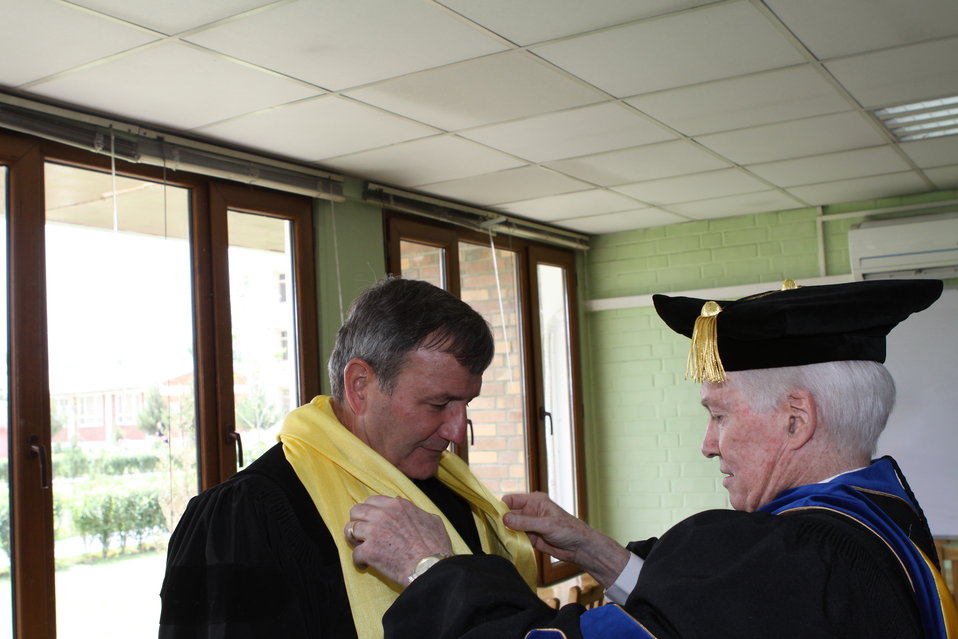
100526 AUAF Graduation 049